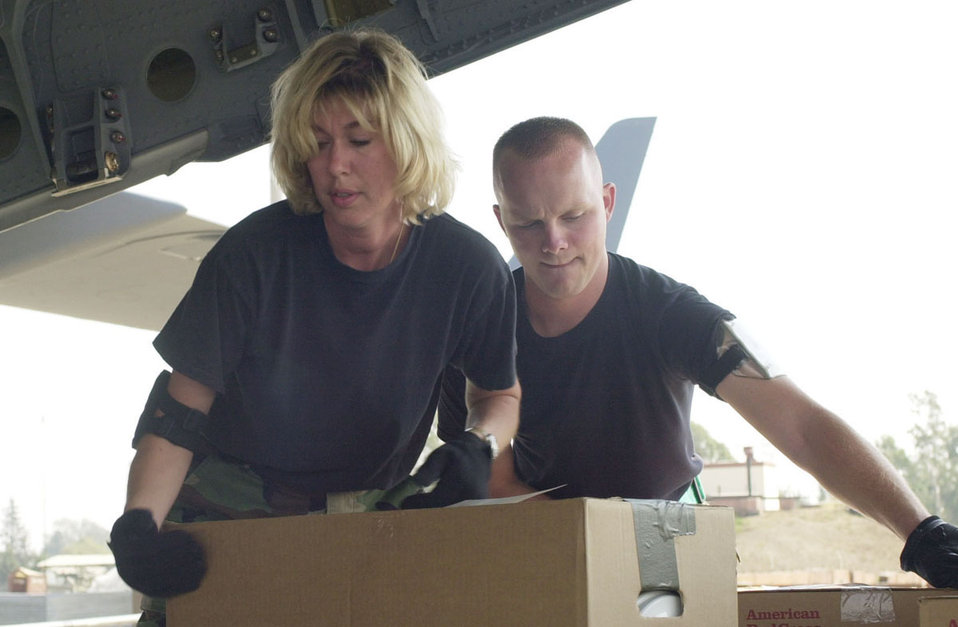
Upload

OPERATION ENDURING FREEDOM -- Two airmen from the 728th Air Mobility Squadron at Incirlik Air Base, Turkey, load care packages onto a C-17 Globemaster III for troops deployed down range in support of Operation Enduring Freedom.